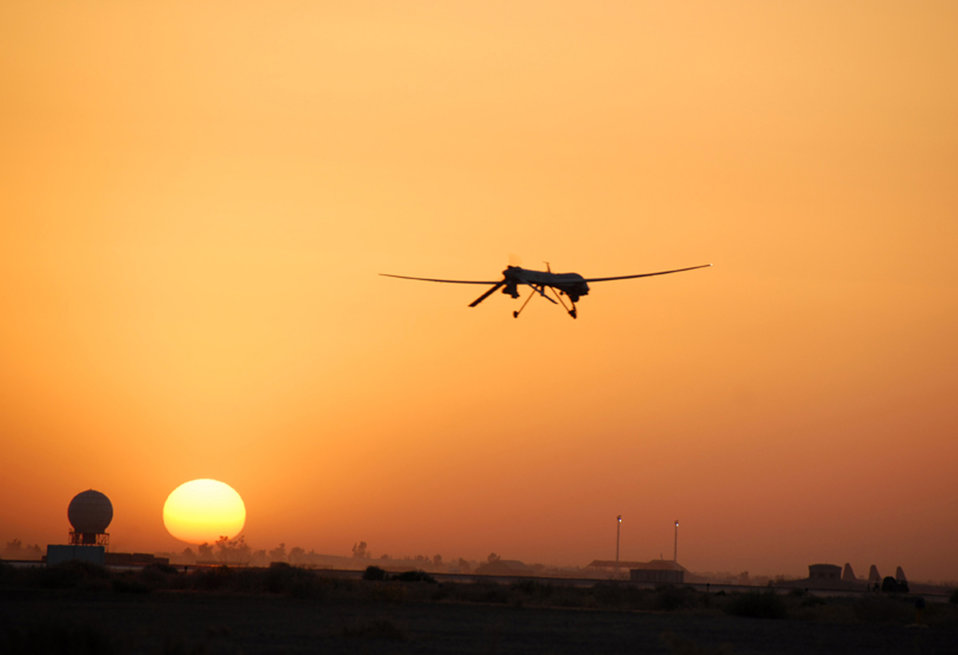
Aug. 11 airpower summary

An Air Force MQ-1B Predator unmanned aerial vehicle goes out on patrol from Balad Air Base, Iraq. Predators fly intelligence, surveillance and reconnaissance missions for operations Enduring Freedom and Iraqi Freedom. Eight MQ-1s flew missions in the area of responsibility Aug. 10.